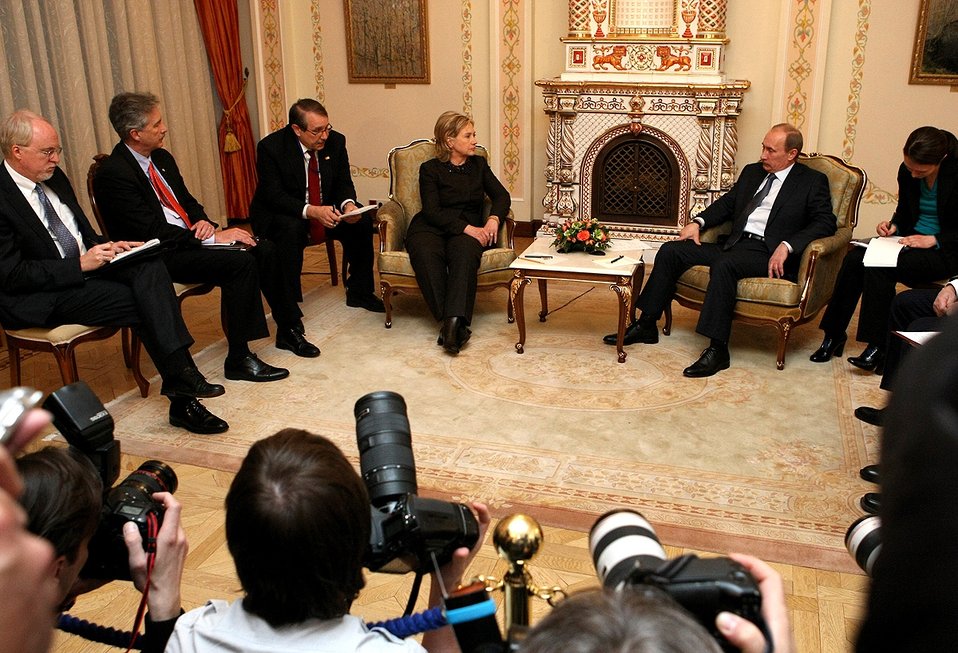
Secretary Clinton Meets With Russian President Putin

U.S. Secretary of State Hillary Rodham Clinton, Ambassador Beyrle and Under Secretary Burns meeting with Russian Prime Minister Putin during a meeting at the Novo-Ogaryovo just outside Moscow, March 19, 2010.